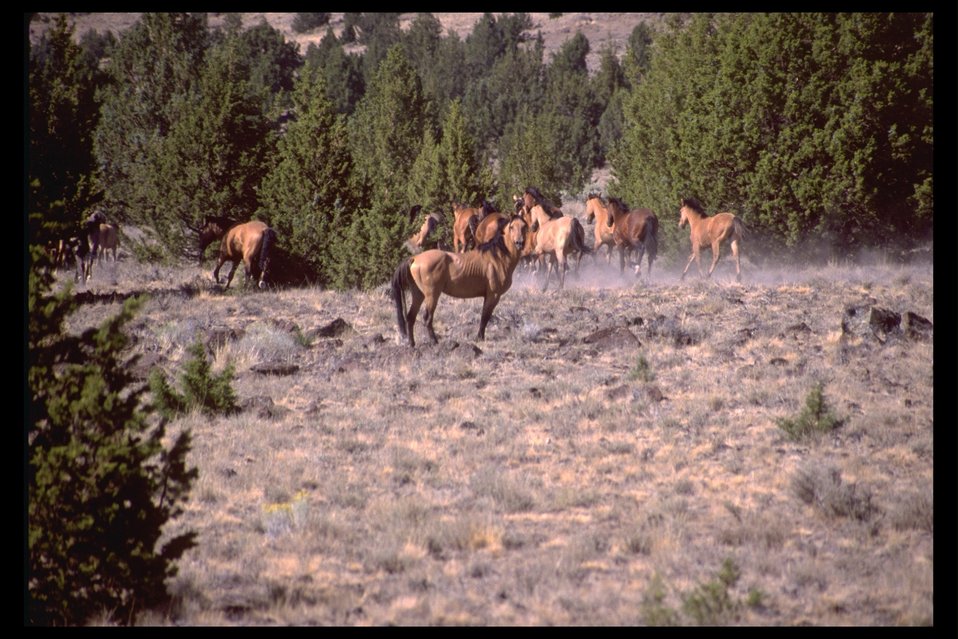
Kiger Mustangs on range, "mesteno" in foreground, last of originals placed in Kiger HMA.